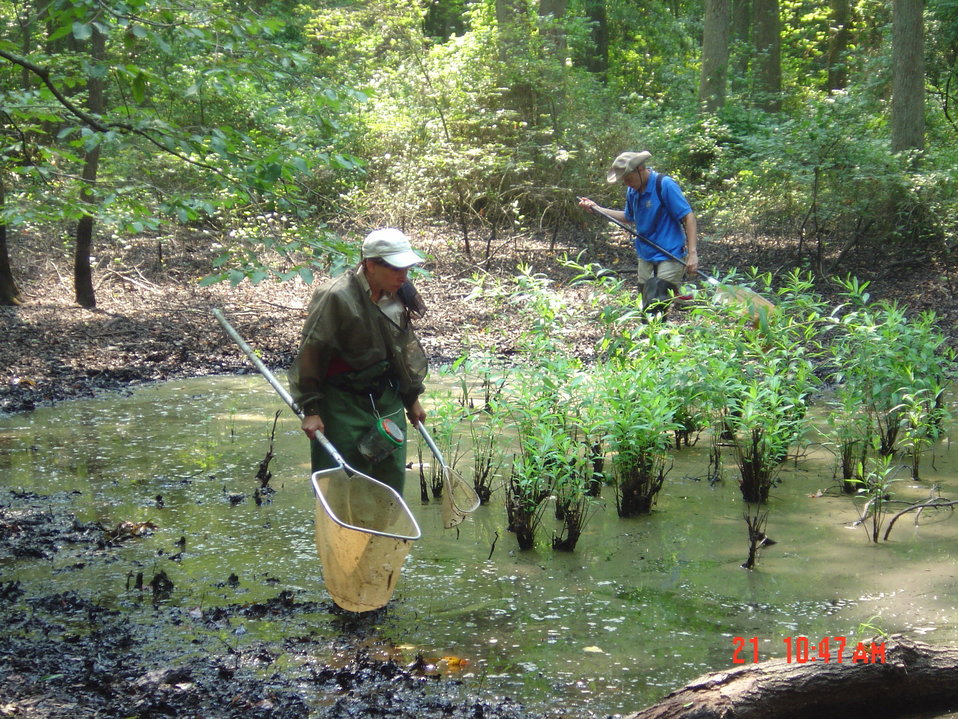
Sampling frogs at Cape May NWR, NJ.